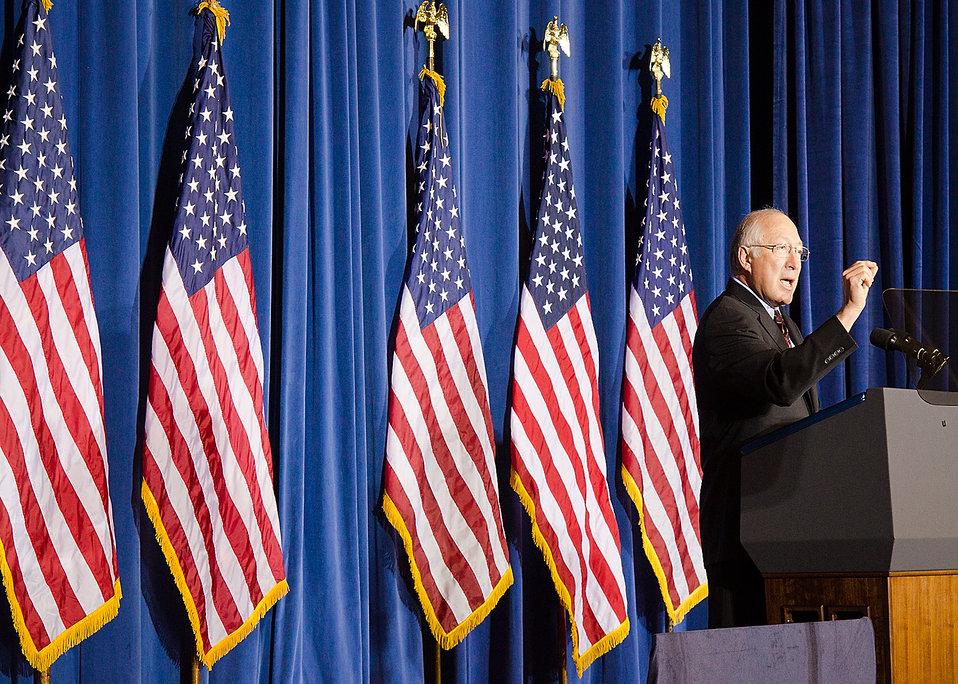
Interior Secretary Ken Salazar addresses the audience at a conservation conference hosted by The White House, “Growing America’s Outdoor Heritage and Economy” at the Department of the Interior, Yates Auditorium in Washington, DC, Friday, March 2, 2012 as part of President Barrack Obama’s, “America’s Great Outdoors Initiative” to spotlight community-driven conservation efforts and discuss how to build their success.